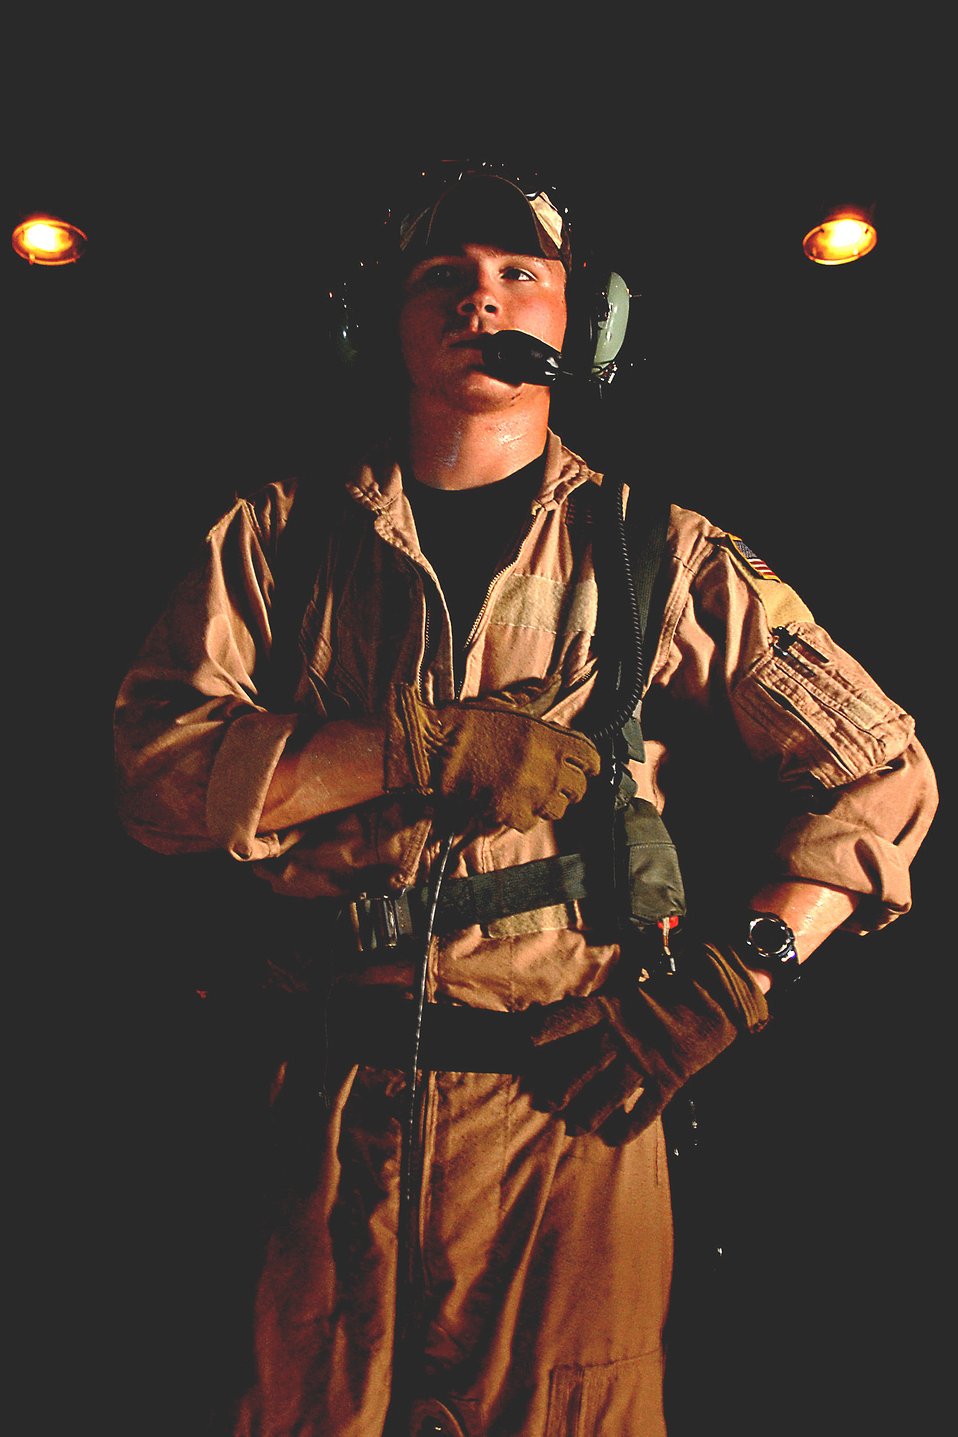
Djibouti Mission

Senior Airman Martin Smith prepares to put on his harness before opening the back ramp of an HC-130 Hercules during a mission June 3 off the coast of Djibouti. Airman Smith is deployed to Combined Joint Task Force-Horn of Africa out of Camp Lemonier, Djibouti. The Airman is an aircraft loadmaster from the 71st Search and Rescue Squadron at Moody Air Force Base, Ga.